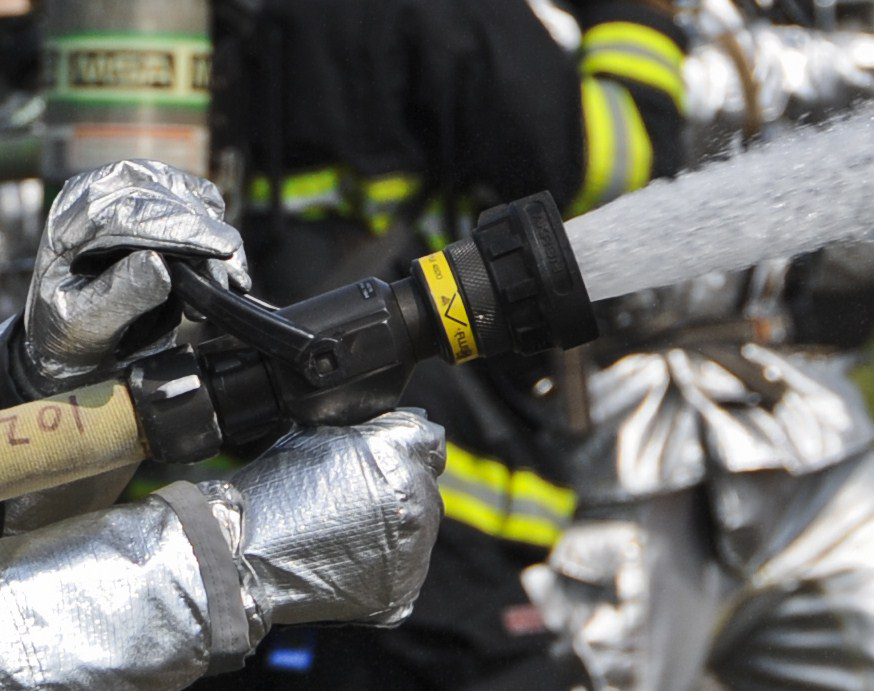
Firefighter training

Airman 1st Class Colin Lorash guides the flow of water to help extinguish a fire June 10, 2011, during a joint firefighting course at Joint Base McGuire-Dix-Lakehurst, N.J.